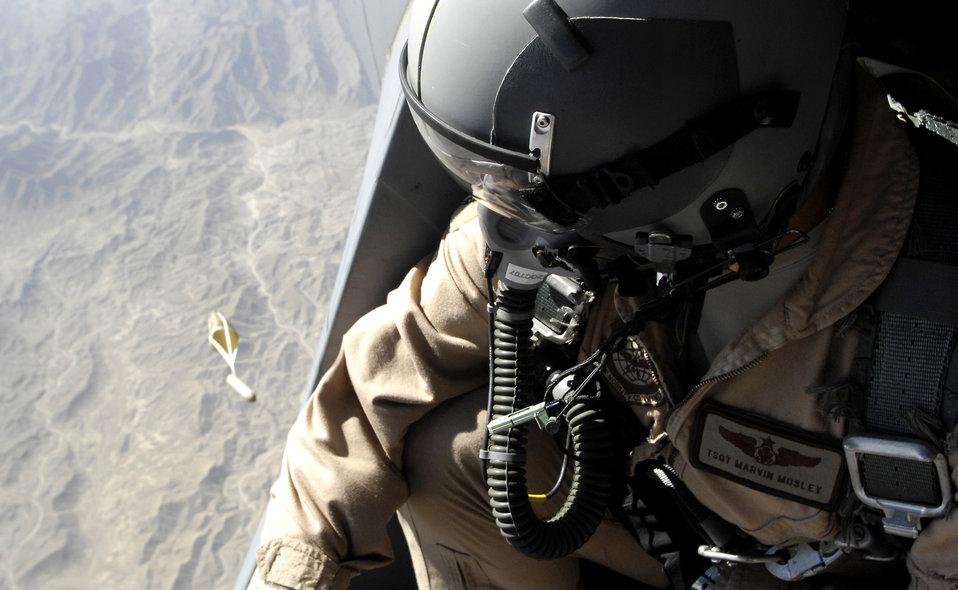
C-17 crews make record airdrop

Tech. Sgt. Marvin Mosley releases a dropsond from the rear door of a C-17 Globemaster III Oct. 11 over Afghanistan. The dropsond is designed to relay information, such as wind speed and altitude, back to a computer onboard the aircraft so the Precision Air Drop System can calculate the best airdrop point. Sixty-two cargo bundles were dropped from two C-17s to a drop zone in Afghanistan. This was the first time a combat cargo drop of this magnitude has taken place from two C-17s in formation over one drop zone. Sgt. Mosley is a loadmaster with the 817th Expeditionary Airlift Squadron, Manas, Kyrgyzstan.